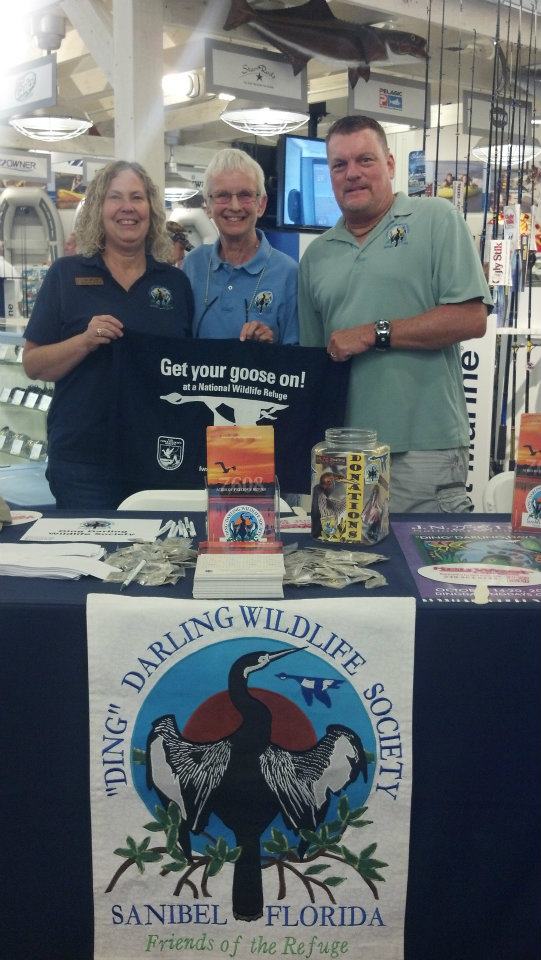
Get Your Goose On!